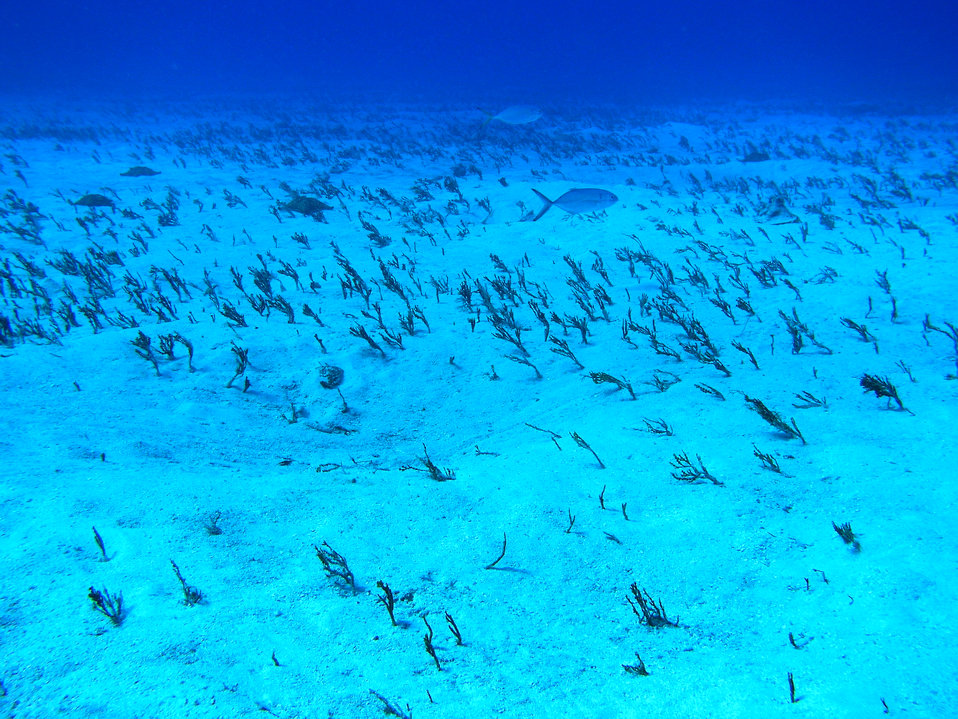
Blue runner (Caranx crysos)